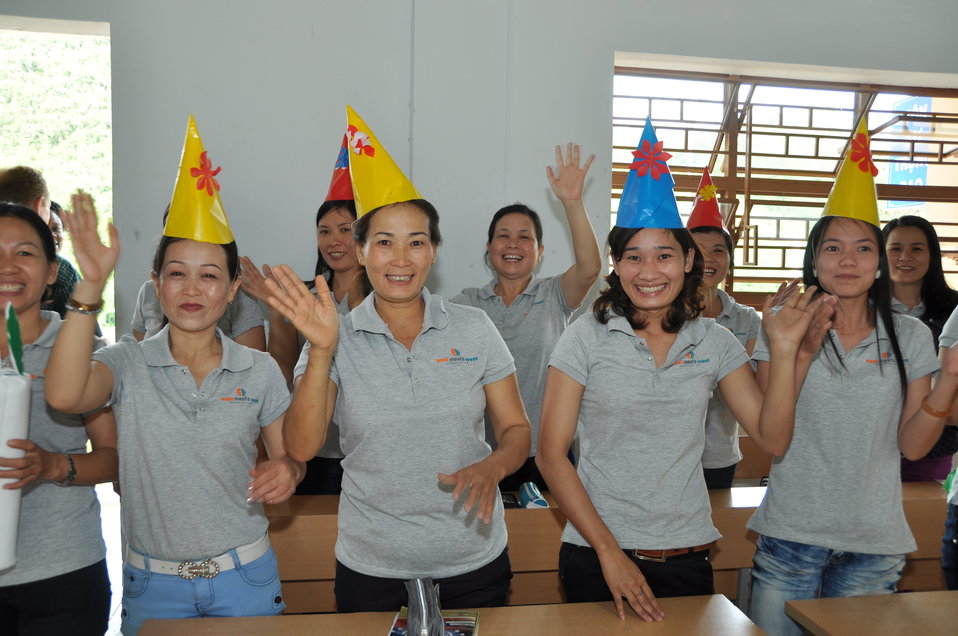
USAID and EMW support teacher training for young ethnic minority children in Kon Tum, Vietnam

@USAIDVietnam